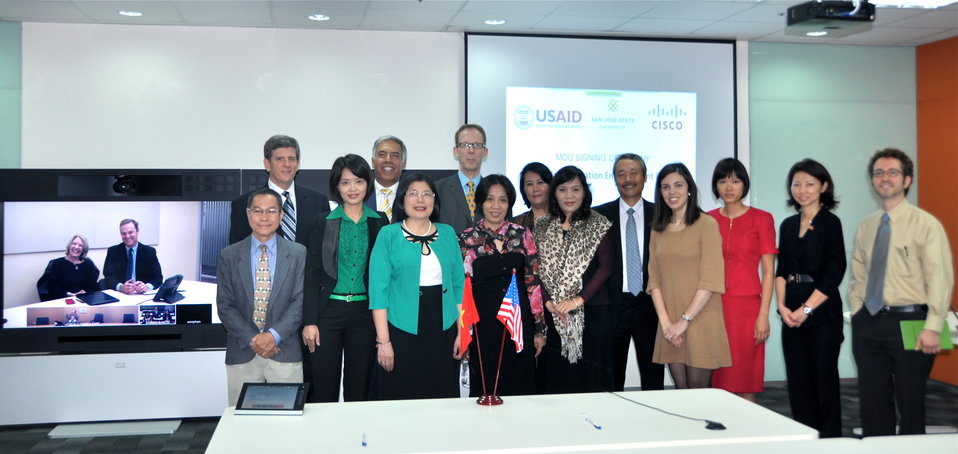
USAID, San Jose State University and Cisco Systems sign the Social Work Education Enhancement Program MOU

Hanoi, November 13, 2013.